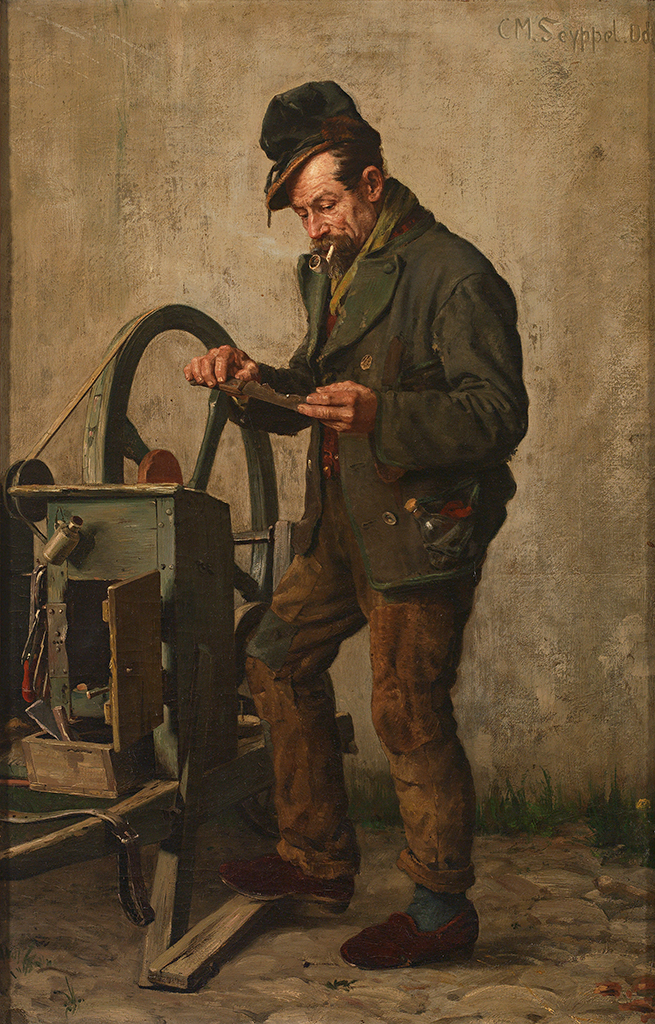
Deutsch: Messerschleifer sinniert über der Arbeit. Öl auf Leinwnad, 73,5 x 47 cm. Signiert, bezeichnet Düsseldorf.